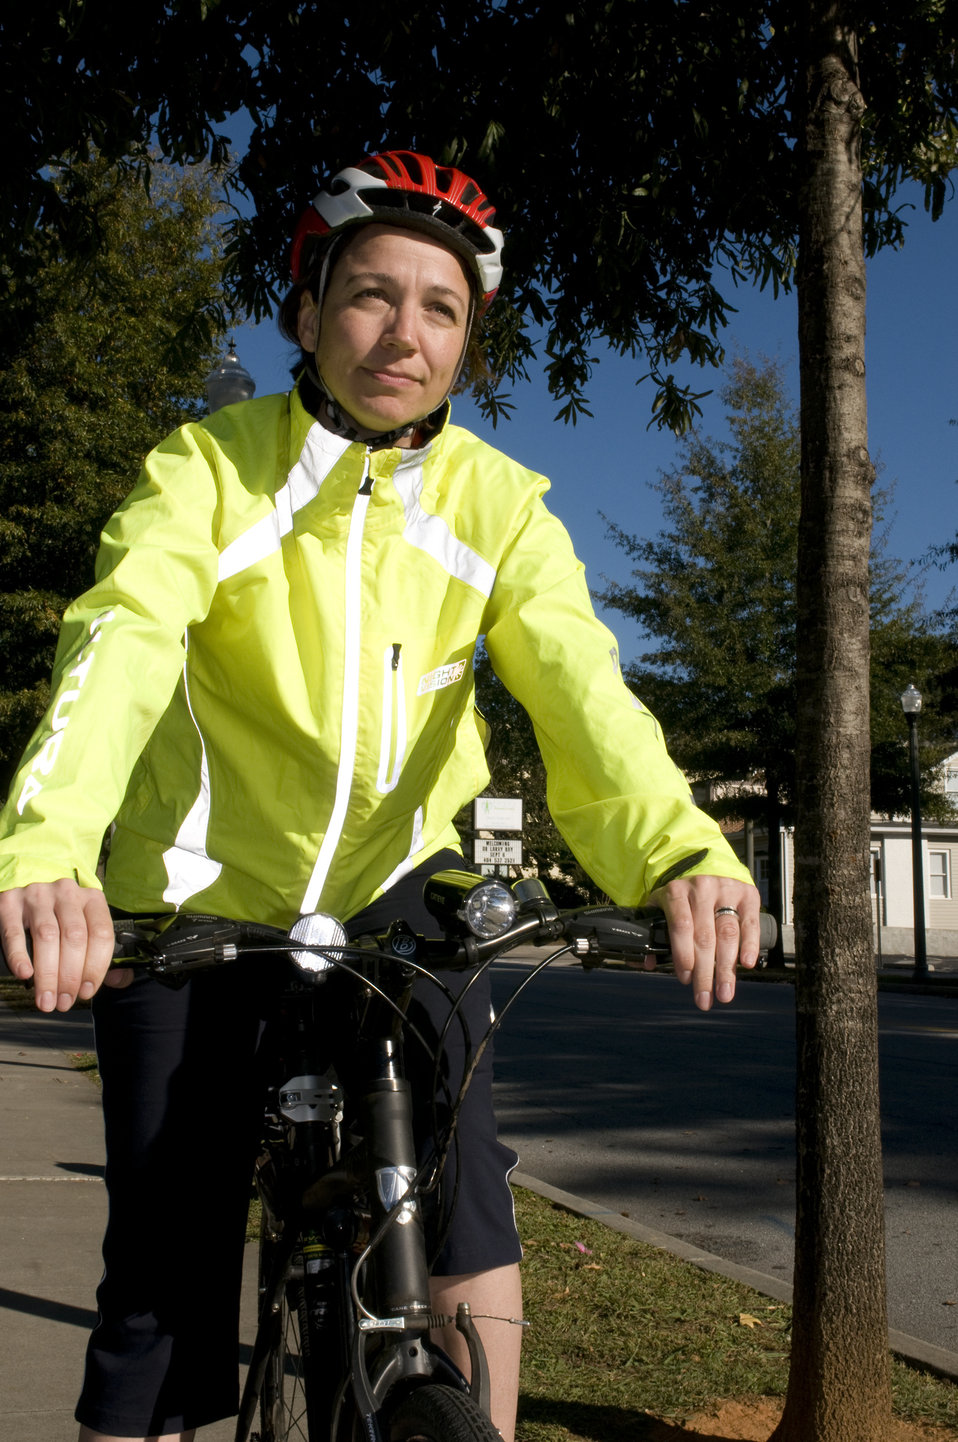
Photographed on a sunny Georgia day was this female bicyclist, who was embarking on a bicycle ride. Note the brightly-colored windbreaker she was wearing, which would help drivers see her more easily, as well as the protective, aerodynamic helmet, and the snug leggings, all adding to an overall safer bike ride.